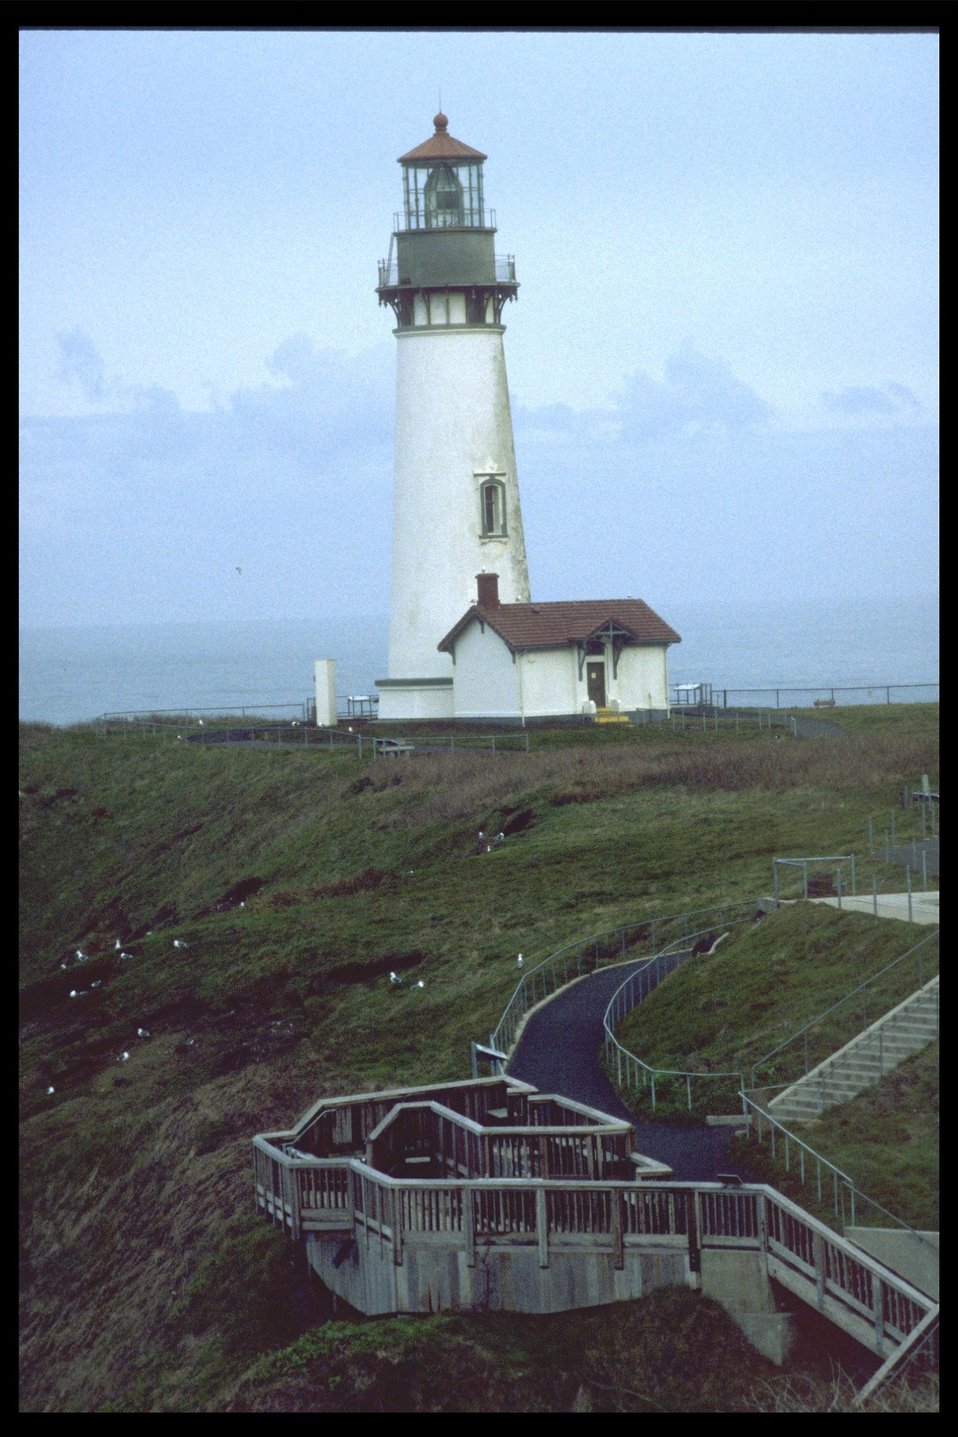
Yaquina Head Lighthouse.